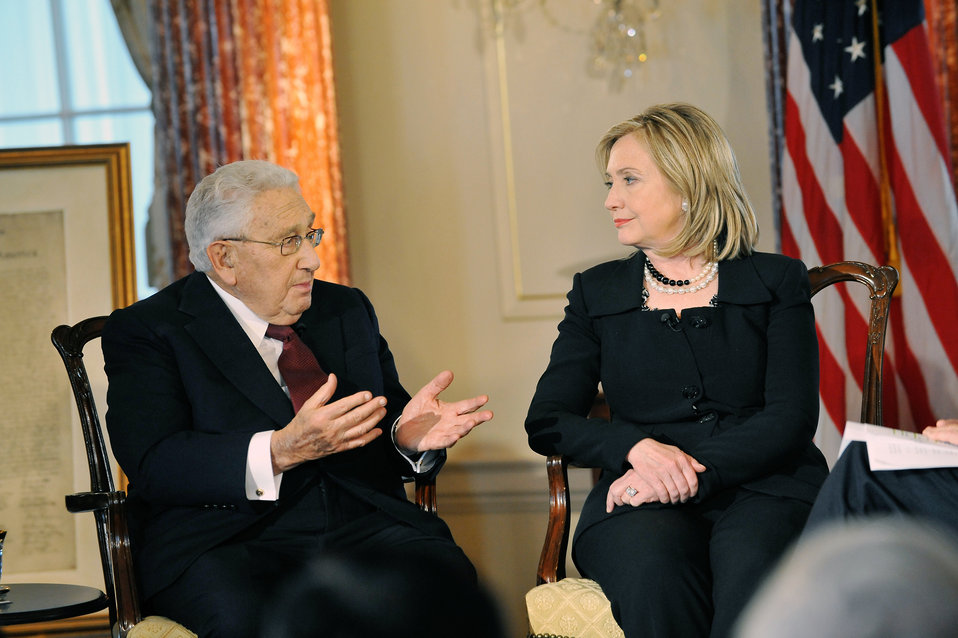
Secretary Clinton and Former Secretary Kissinger Film 'Conversations on Diplomacy, Moderated By Charlie Rose'

U.S. Secretary of State Hillary Rodham Clinton and former U.S. Secretary of State Henry Kissinger film, 'Conversations on Diplomacy, Moderated by Charlie Rose,' at the U.S. Department of State in Washington, D.C., on April 20, 2011.